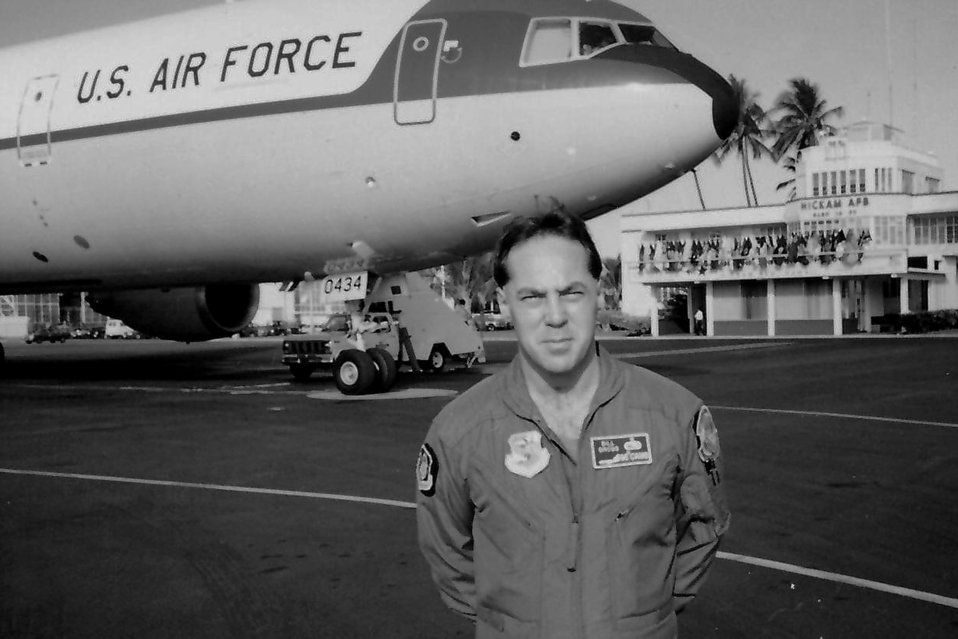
KC-10's 30th Birthday

Then Technical Sgt. Bill Gross stands on the flightline Dec. 7, 199, at Hickam Air Force Base, Hawaii. Sergeant Gross was in Hawaii to help commemorate the 50-year anniversary of the bombing of Pearl Harbor. Sergeant Gross was a long-time crew chief assigned to the Air Force's first KC-10 and has been stationed with the aircraft for nearly his entire career. As the KC-10 celebrates its 30th year of Air Force service on March 17, 2011, Sergeant Gross can claim that he has been there every step of the way.